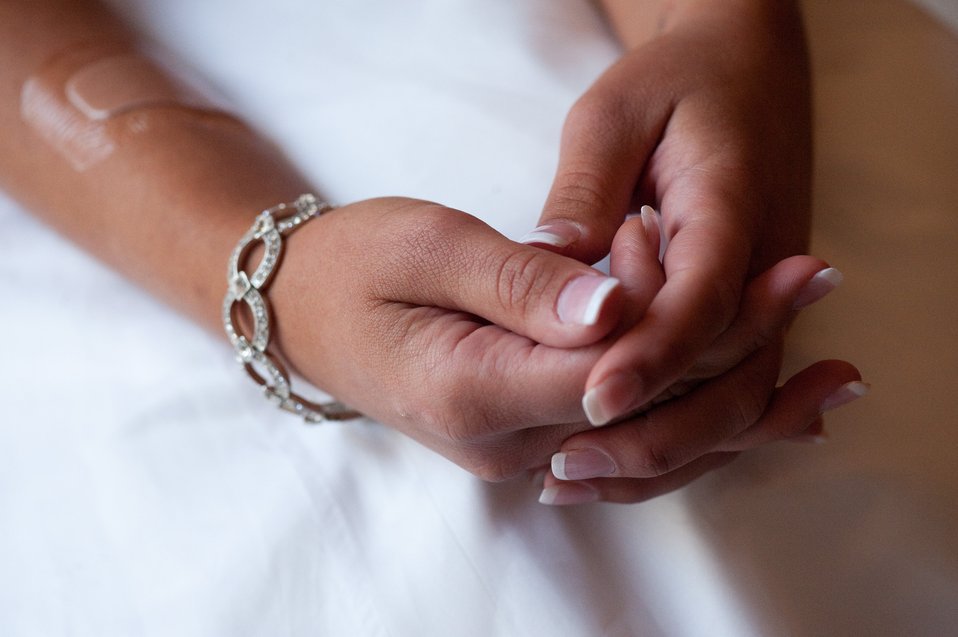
San Francisco Dream Wedding

A bandage on Vanessa Muza Teskey's arm is the only clue that she currently receives chemotherapy for stage IV Hodgkin's lymphoma. On May 14, 2010, she married Capt. Mike Hawkins at San Francisco's waterfront during a